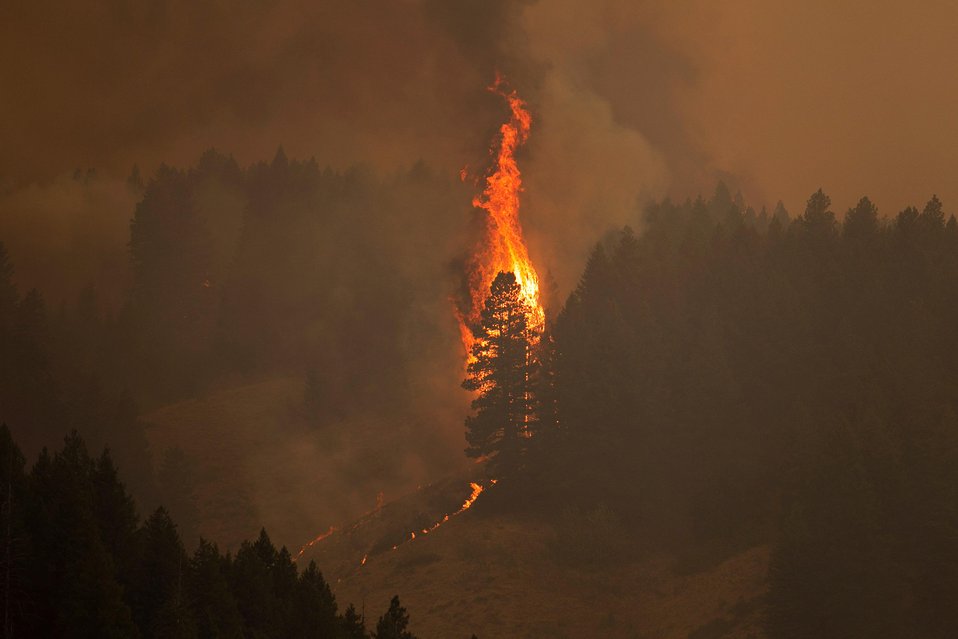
The Elk Complex Fire in the Boise National Forest near Pine, ID began on Aug. 08, 2013 by lightning has consumed approximately 98,413 acres and is approximately 5% contained.